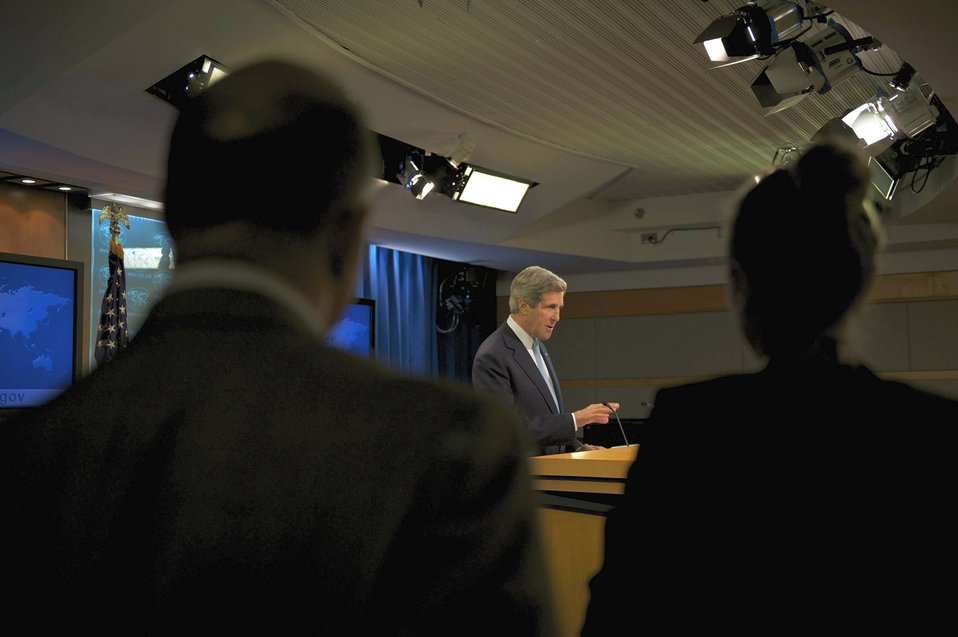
Secretary Kerry Delivers Remarks on the Release of the Human Rights Report

U.S. Secretary of State John Kerry delivers remarks on the release of the Human Rights Report at the U.S. Department of State in Washington, D.C., on April 19, 2013.